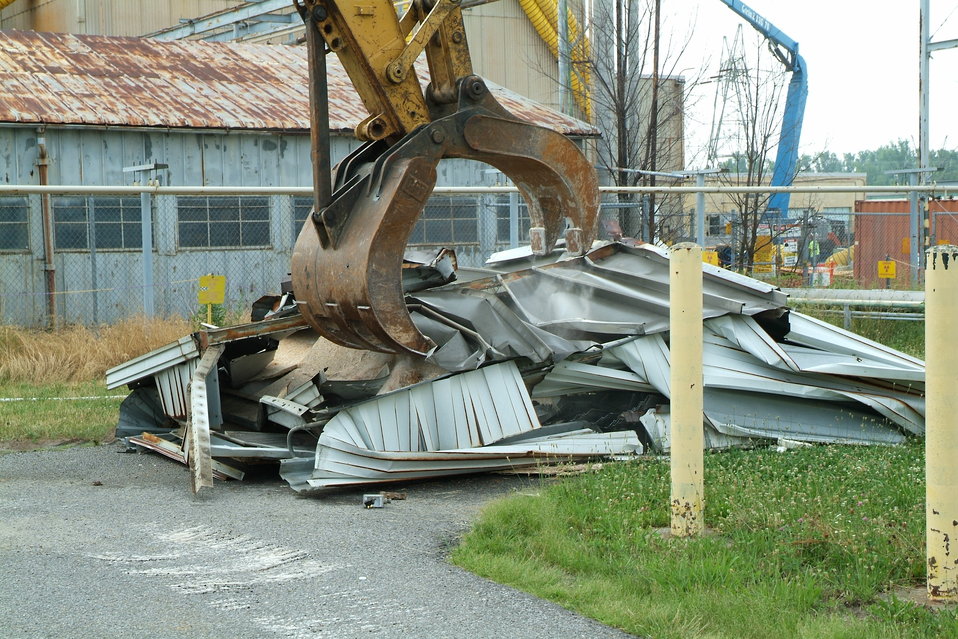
Power structure during demolition

Recovery Act work conducted at the Paducah site.